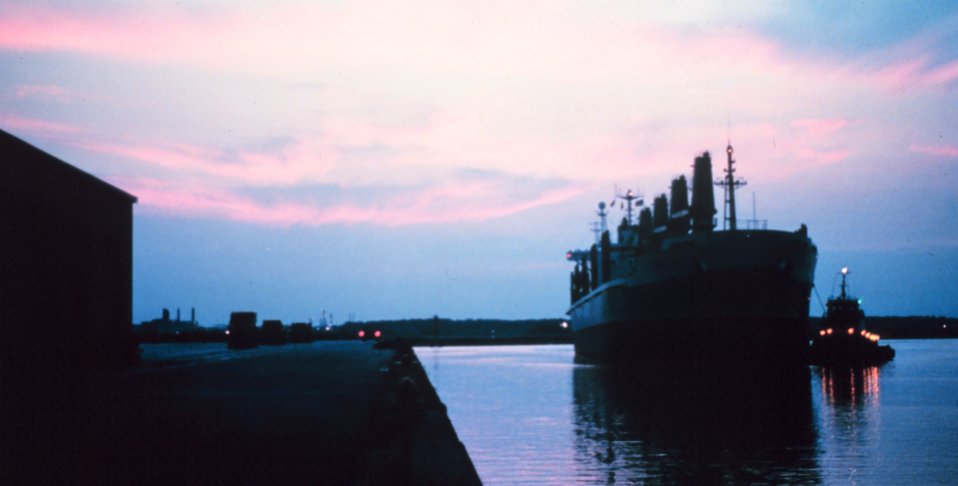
A large break-bulk merchant vessel docking at sunset at Lake Charles.